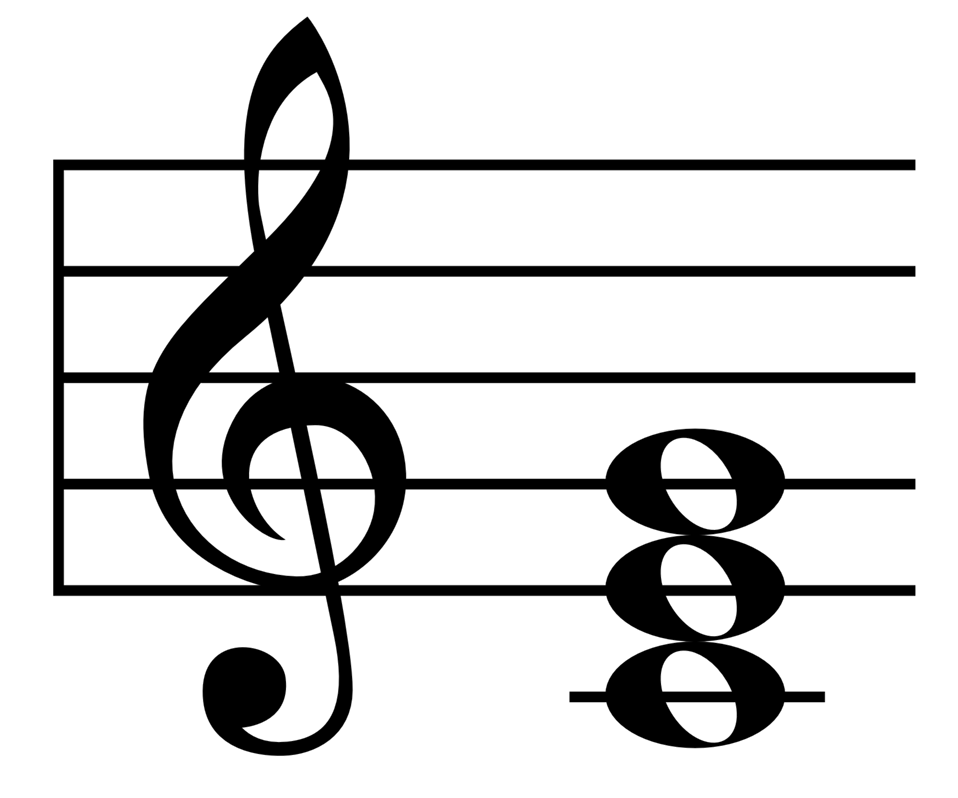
The C-major triad.